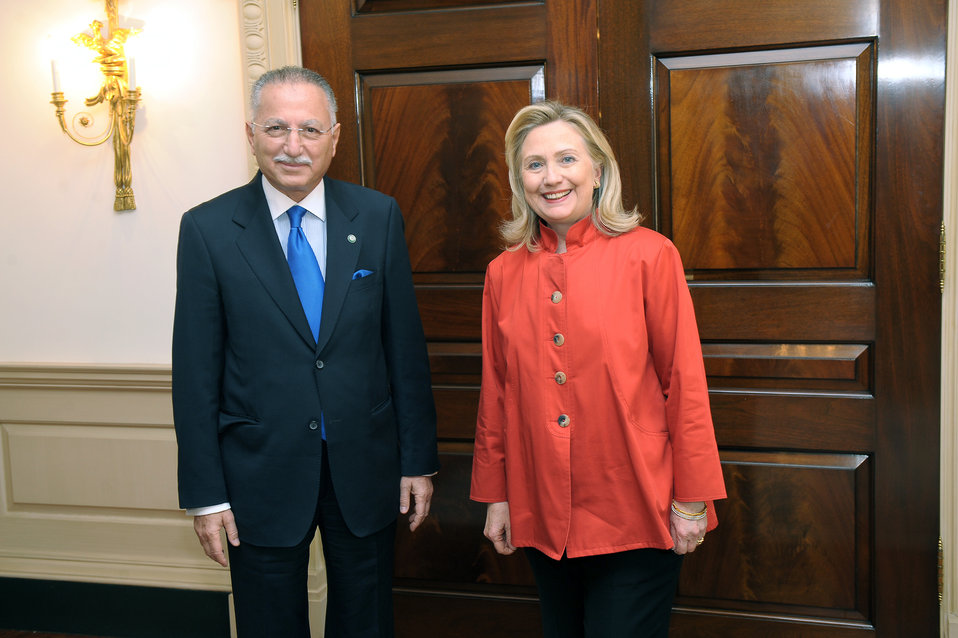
Secretary Clinton Meets With Secretary General Ihsanoglu of the Organization of Islamic Cooperation

U.S. Secretary of State Hillary Rodham Clinton meets with Secretary General Ekmeleddin Ihsanoglu of the Organization of Islamic Cooperation (OIC) at the Department of State in Washington, D.C. on March 15, 2012.